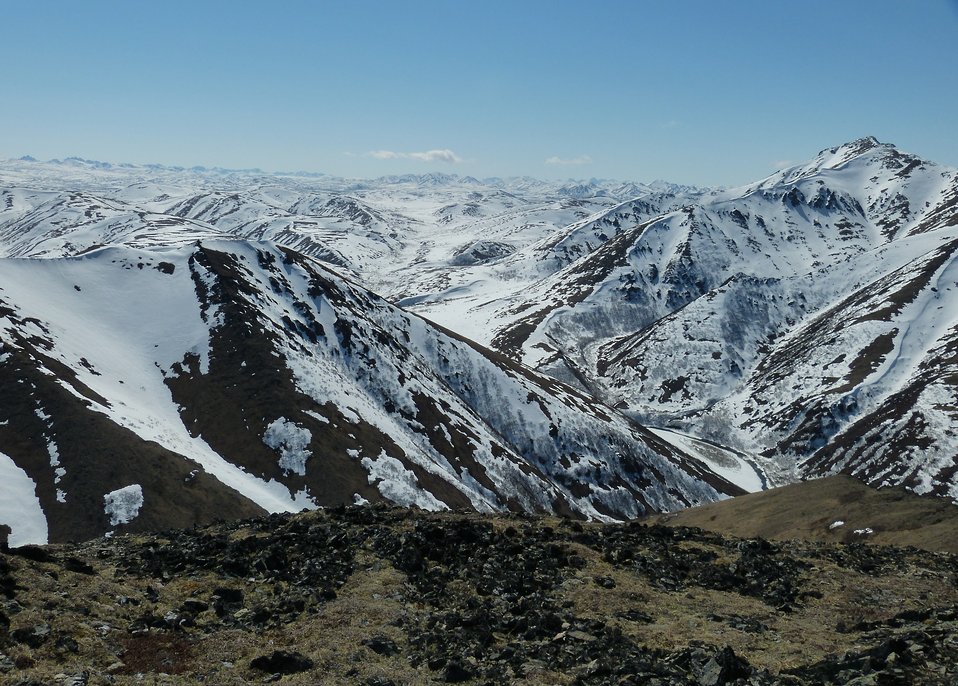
Kilbuck Mountains May2013 KSowl

Cliff-nesting raptor survey, Kilbuck Mountains, Yukon Delta National Wildlife Refuge

Photo credit: Kristine Sowl,
USFWS, YDNWR